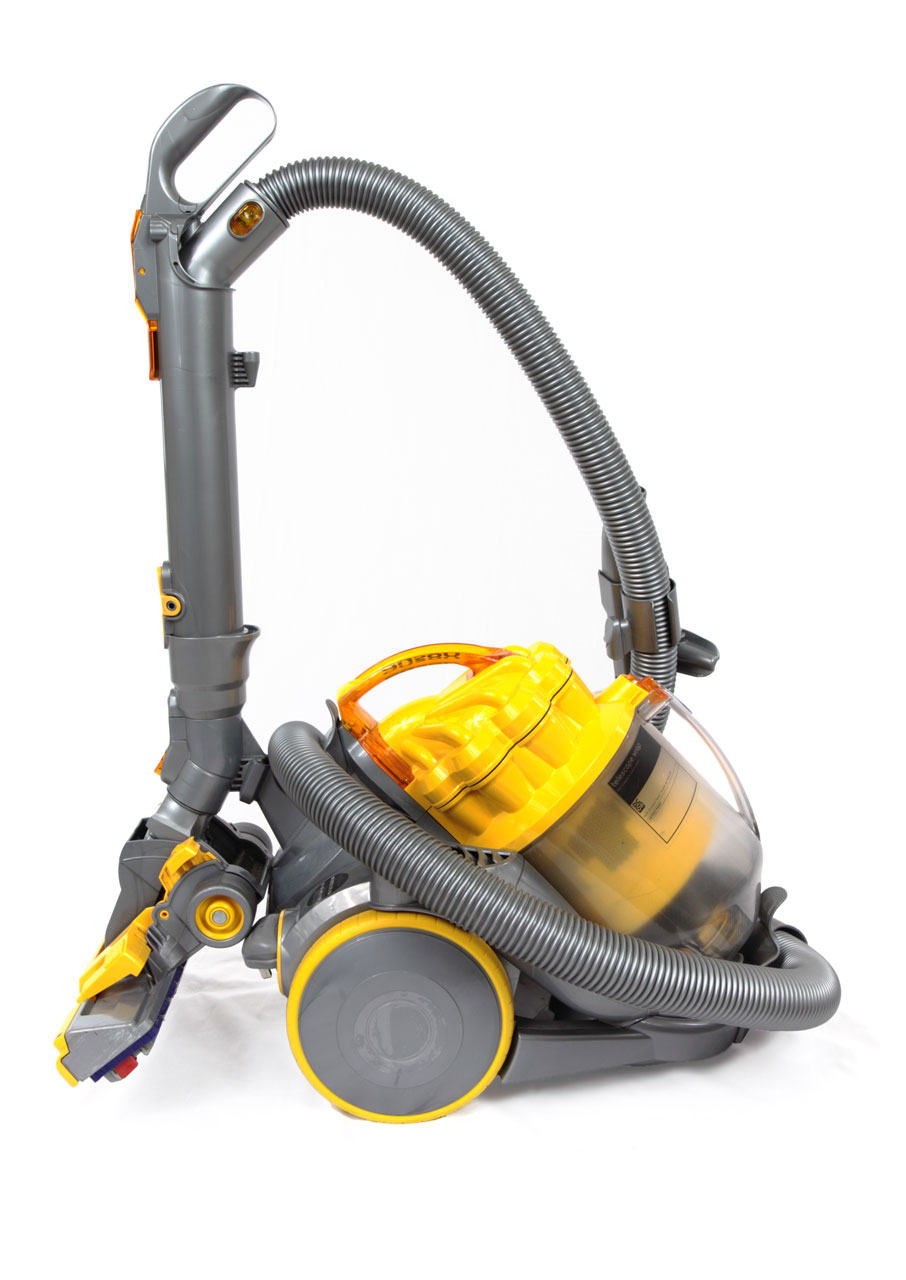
Vacuum cleaner

Cylinder hoover isolated on white background.